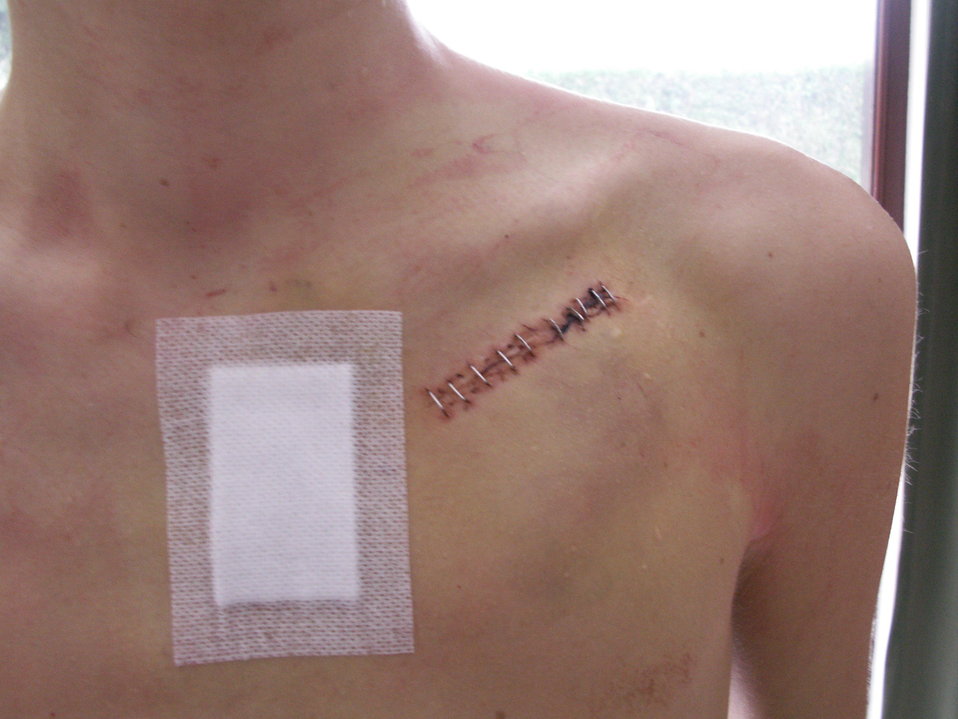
Wound left after Pacemaker Implant.